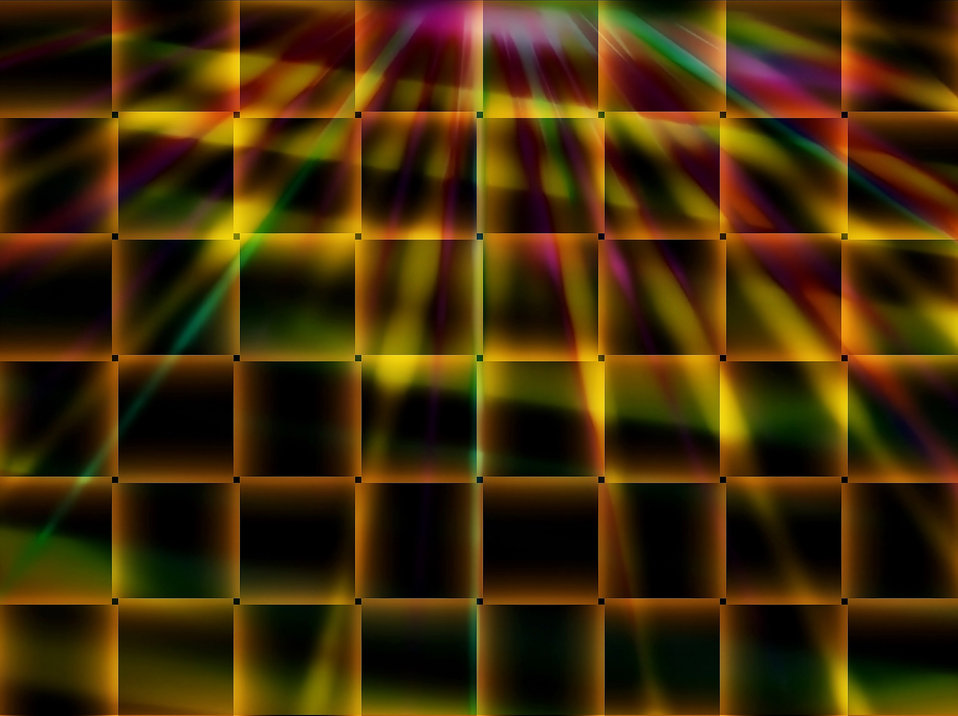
Disco weaving pattern.